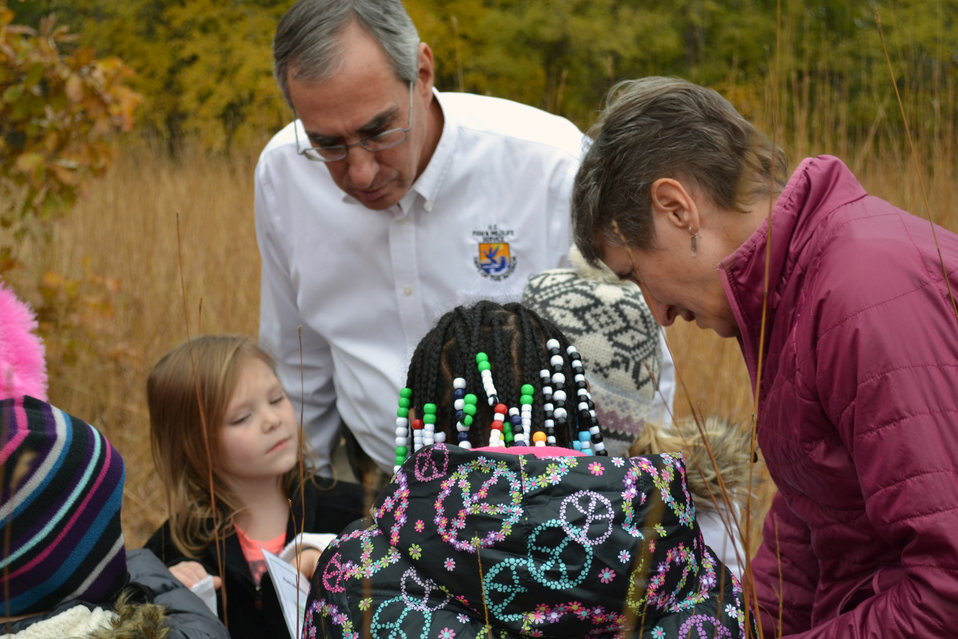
Prairie Seed Collection

Secretary Sally Jewell and Regional Director Tom Melius help Minneapolis second graders collect native prairie seeds during her visit to Minnesota Valley National Wildlife Refuge.